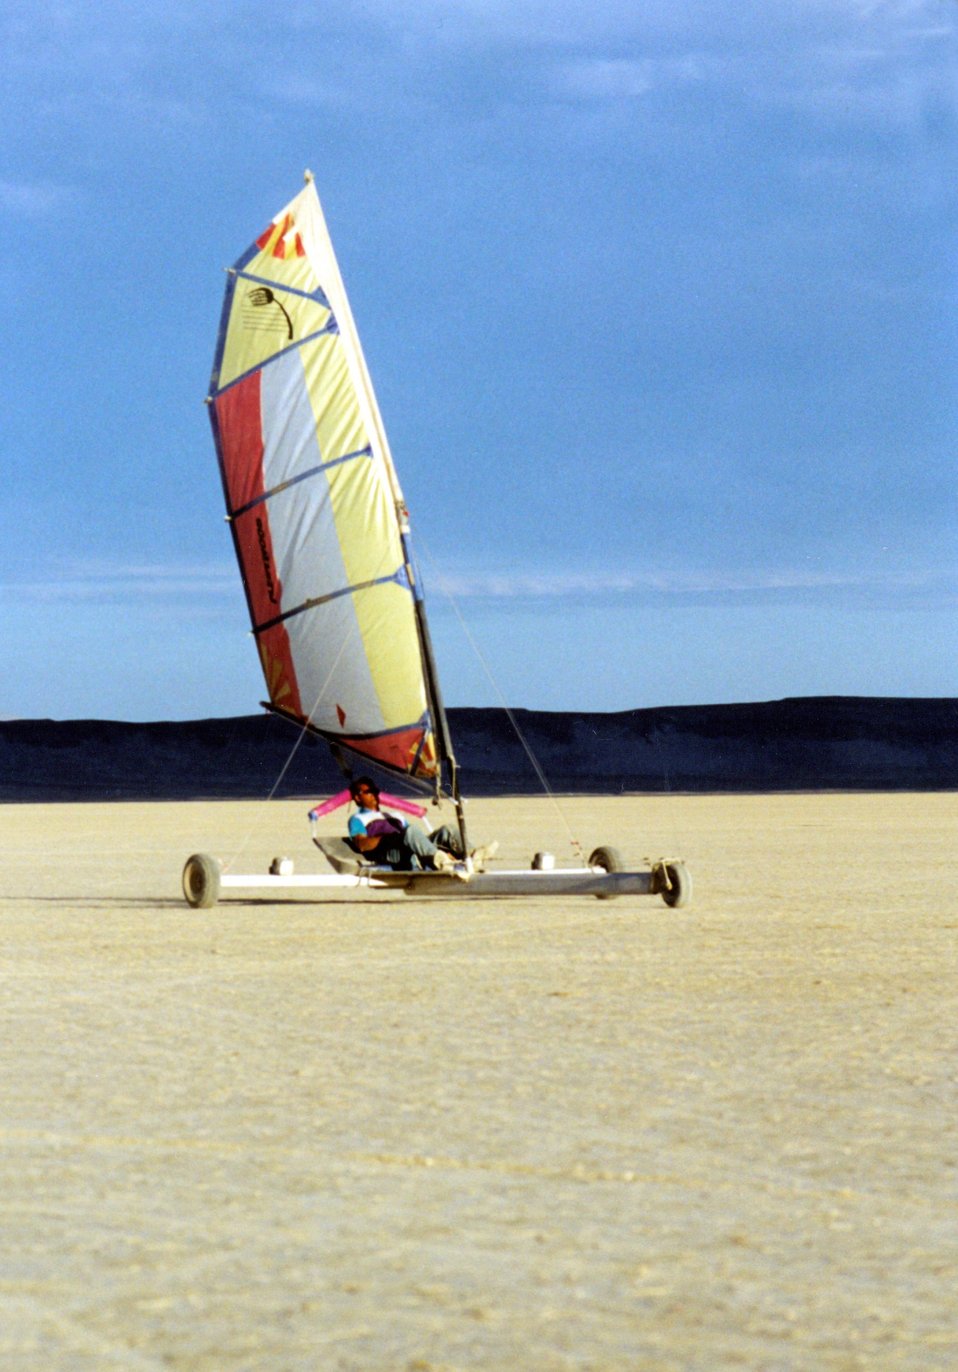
Sand Saling on the Alvord Desert in eastern Oregon.